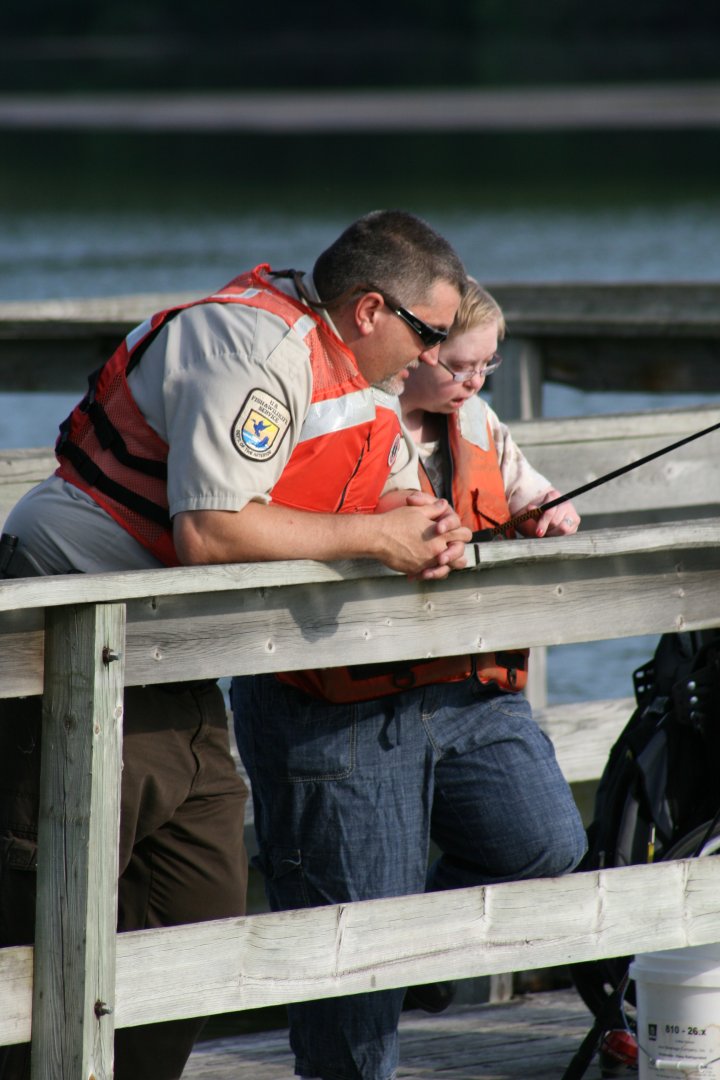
LEO Hirschboeck assists a Project COMPASS client

Refuge Law Enforcement Officer Rob Hirschboeck displays a catch of a Project COMPASS client.